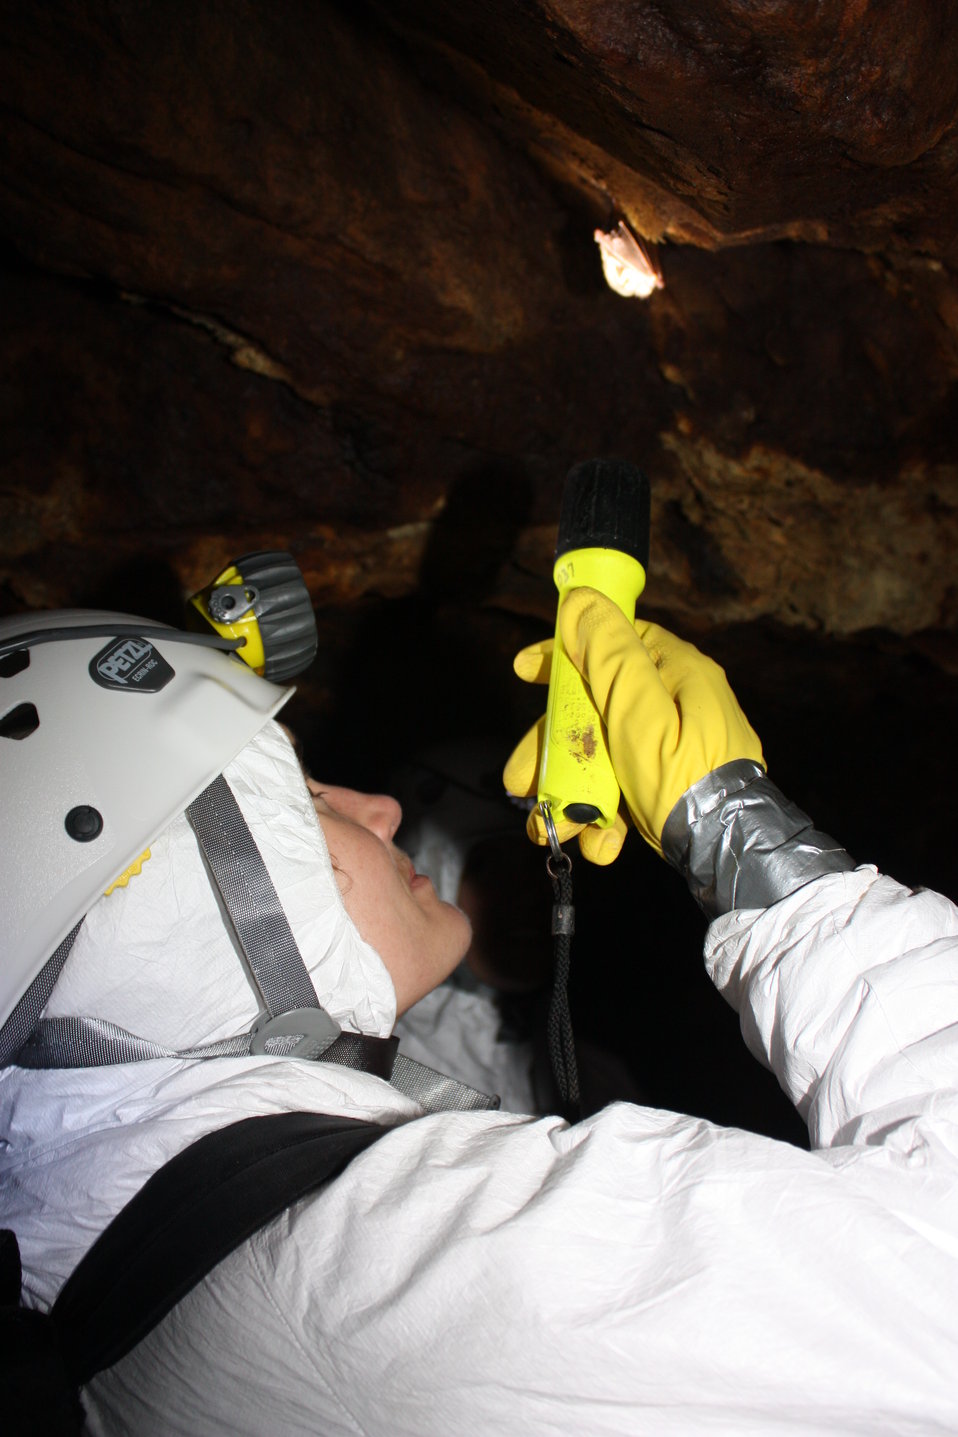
NCWRC biologist Gabrielle Graeter checking bat